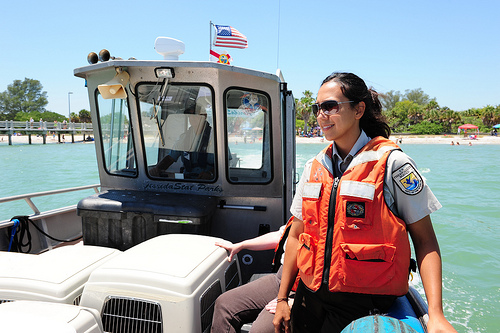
U.S. Fish and Wildlife Staff Transports Birds

ST. PETERSBURG, Fla. -- Gisela Chapa, U.S. Fish and Wildlife Service refuge manager, prepares to release six rehabilitated birds at the Egmont Key National Wildlife Refuge near St. Petersburg May 30, 2010. The four Brown Pelicans, one Laughing Gull and one Northern Gannet were cleaned at Fort Jackson, La., after being found oiled near Louisiana's coast. U.S. Coast Guard photo by Petty Officer 3rd Class Nick Ameen.